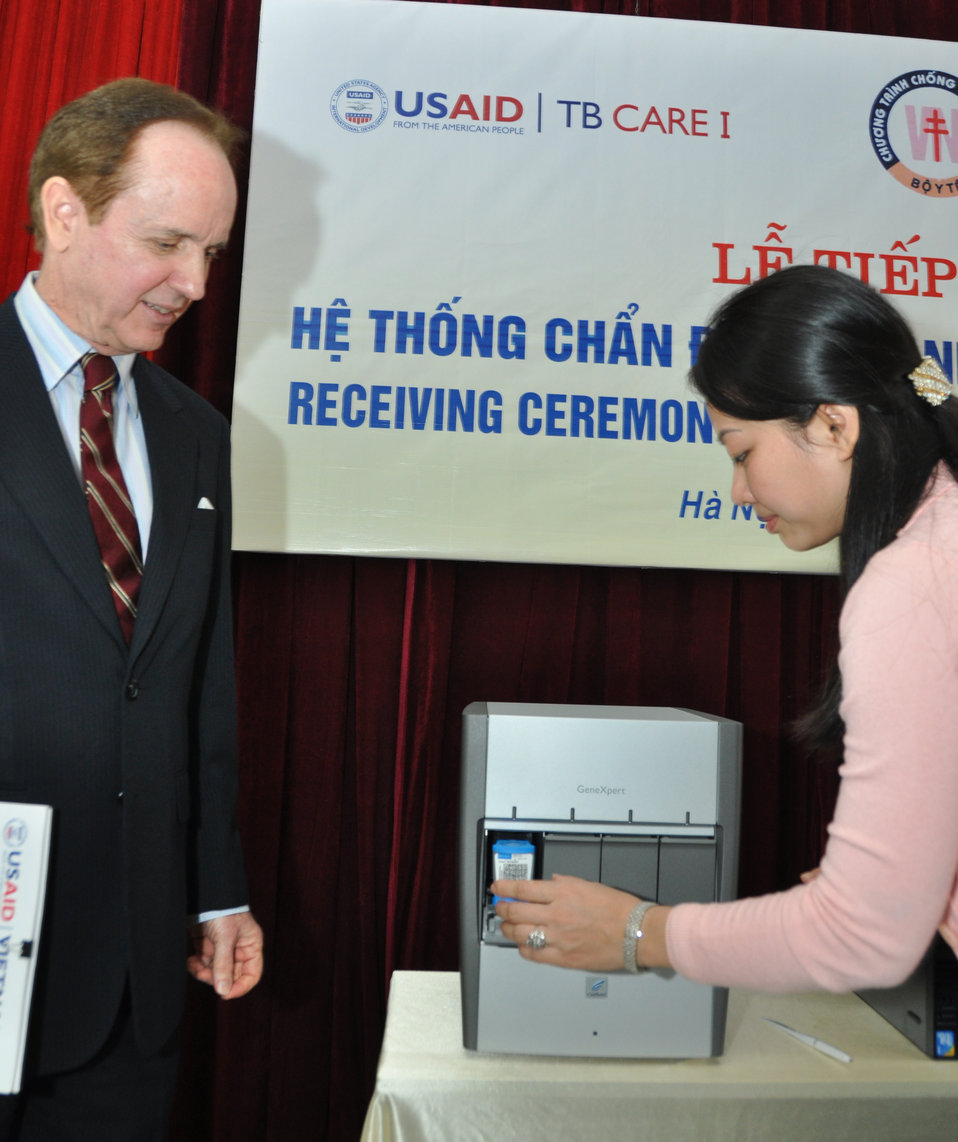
USAID Mission Director Francis Donovan learns how the equipment functions

USAID delivers TB and MDR-TB diagnostic equipment